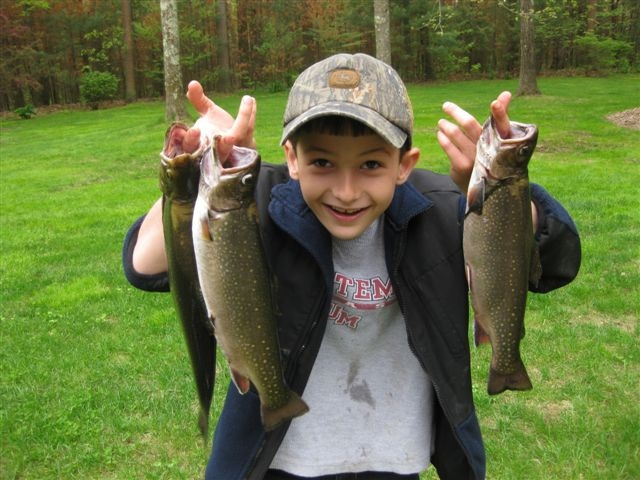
boy with trout

Fishing rodeo at USFWS NE Region, Hadley, MA